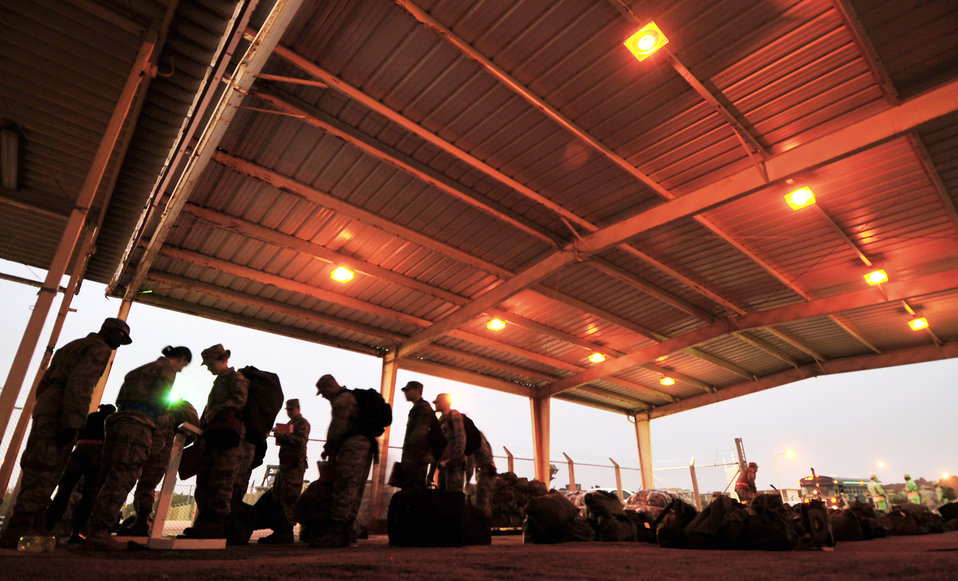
Beverly High 10-02

Airmen are weighed-in before processing through the Installation Deployment Readiness Center during a base exercise March 22, 2010, at Kadena Air Base, Japan. The 18th Wing participated in a local operational readiness exercise to test base Airmen's ability to defend Japan and maintain peace and stability in the Pacific region.